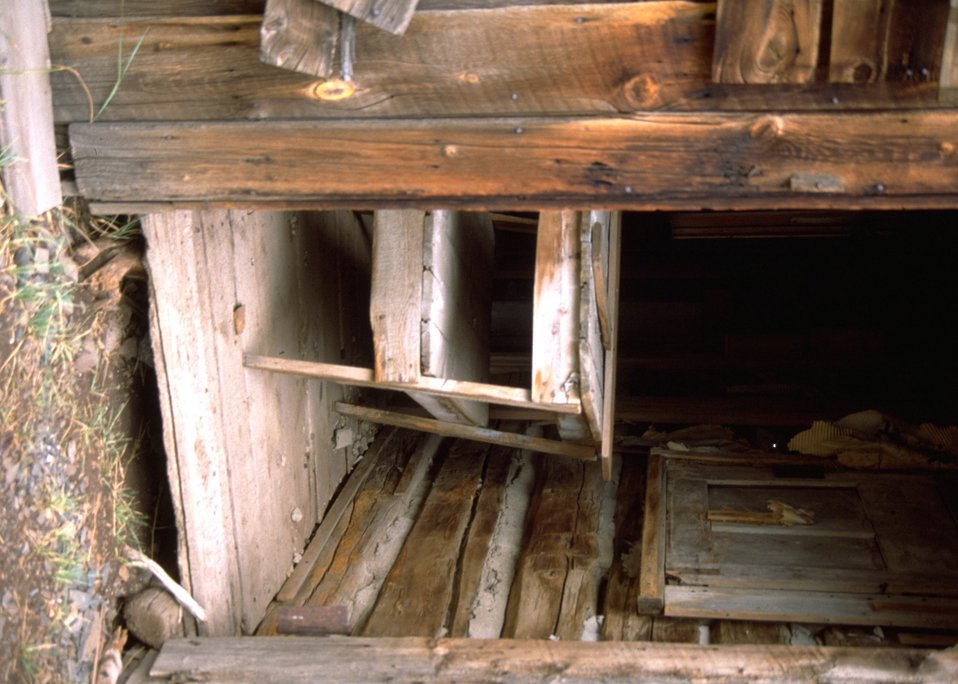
Old structures.